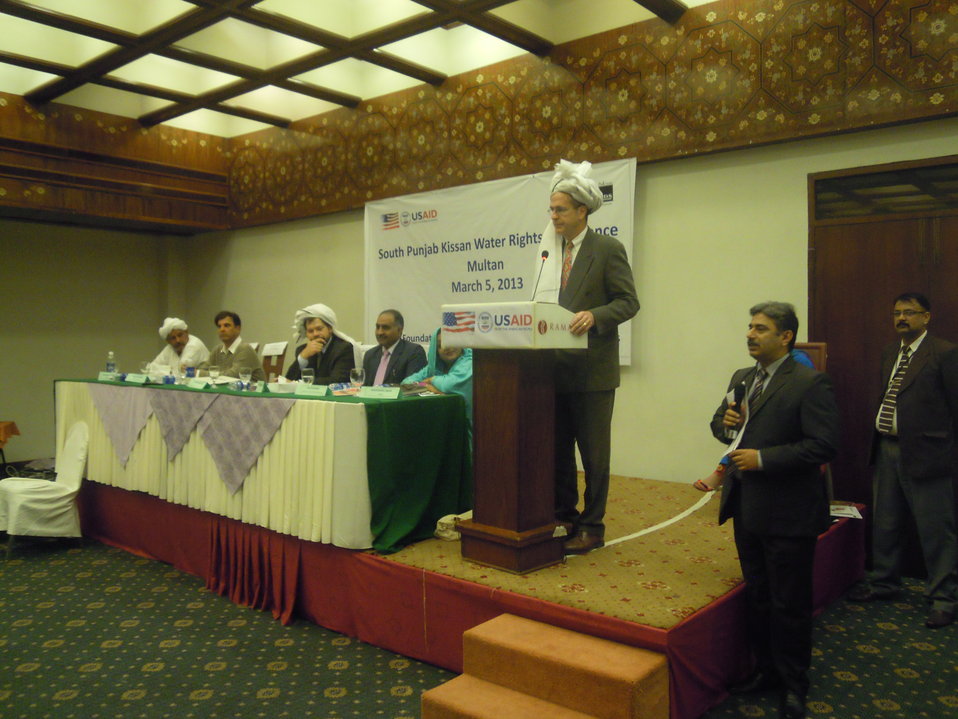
Caption 2 - AwazCDS - Multan - South Punjab Kissan Water Rights Conference

Behind the podium and with a traditional Punjabi turban on his head is USAID’s Pakistan Mission Director, Mr. Jonathan Conly. He is addressing a gathering of farmers and small-scale landowners southern Punjab during the South Punjab Kissan Conference organized by Awaz-Center for Peace and Development, a civil society organization implementing a project on improving water rights in Multan under USAID’s Citizens’ Voice Project.